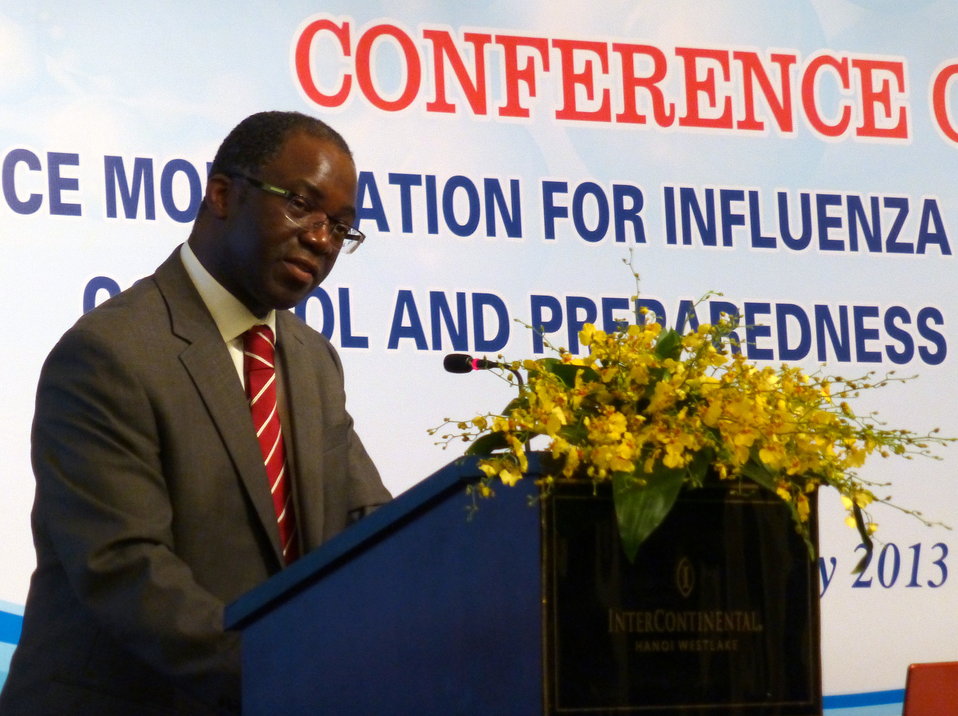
Dr. Babtunde Olowokure, WHO, speaks at the Conference on Resource Mobilization for Influenza A (H7N9) Prevention, Control and Preparedness in Vietnam

Hanoi, May 6, 2013
Supported by USAID Vietnam